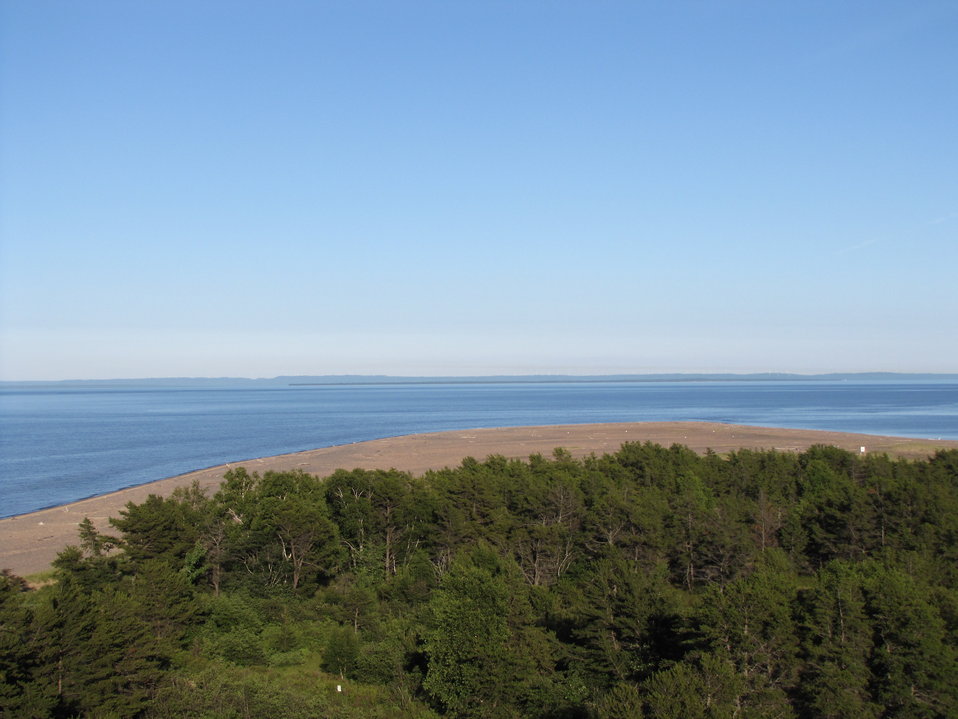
View from lighthouse

View of Whitefish Point Unit of Seney National Wildlife Refuge from lighthouse.